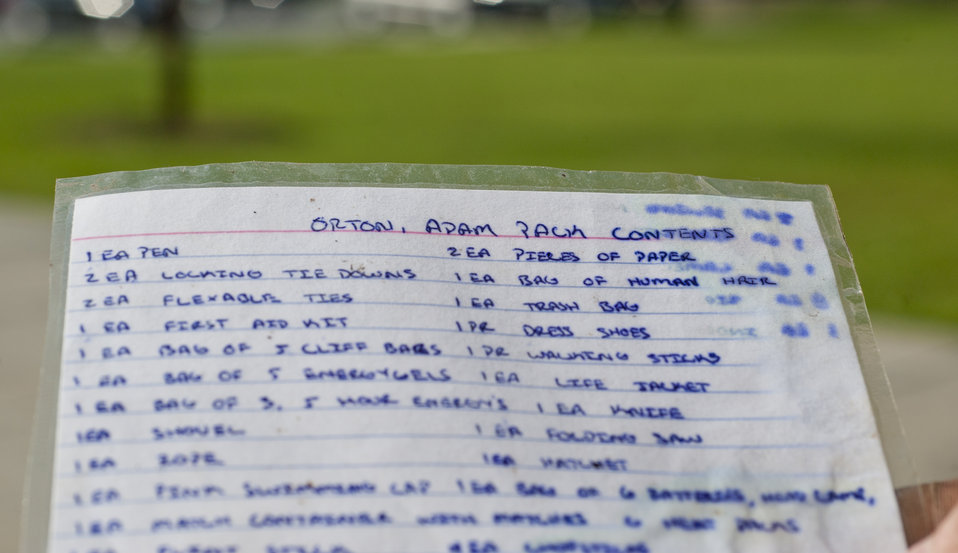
Listing the goods

Airman 1st Class Adam Orton holds his inventory list from the 2012 Spartan Death Race, Aug. 9, 2012 at Moody Air Force Base, Ga. The competitors were required to write everything in their pack on an index card. Today, Orton keeps this card in his backpack for motivation.